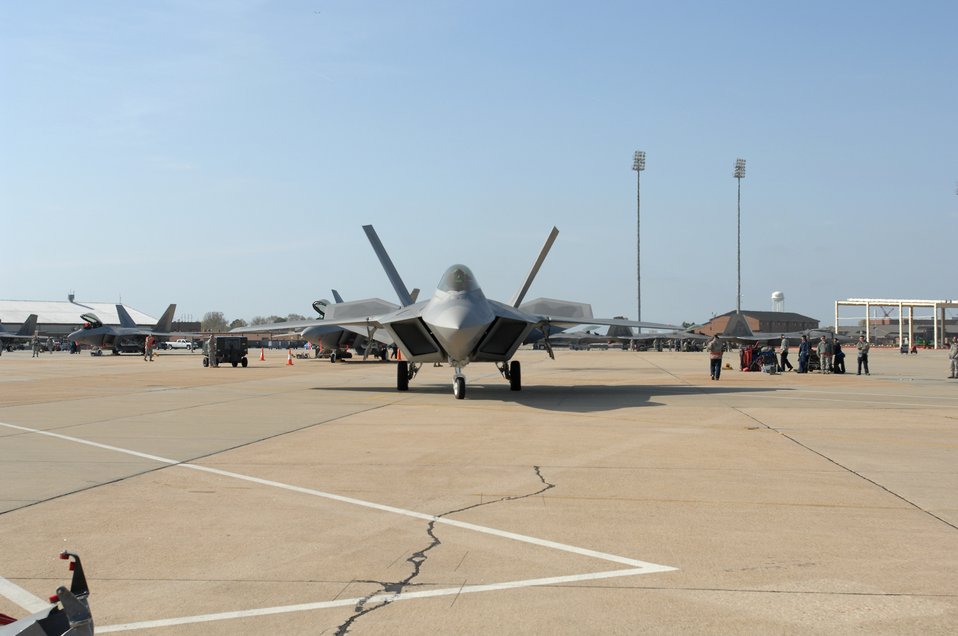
Operational readiness inspection

Lt. Col. Bryan Salmon prepares an F-22 Raptor for taxiing April 10, 2011, during an operational readiness inspection at Langley Air Force Base, Va. Colonel Salmon is the director of operations for the 149th Fighter Squadron.